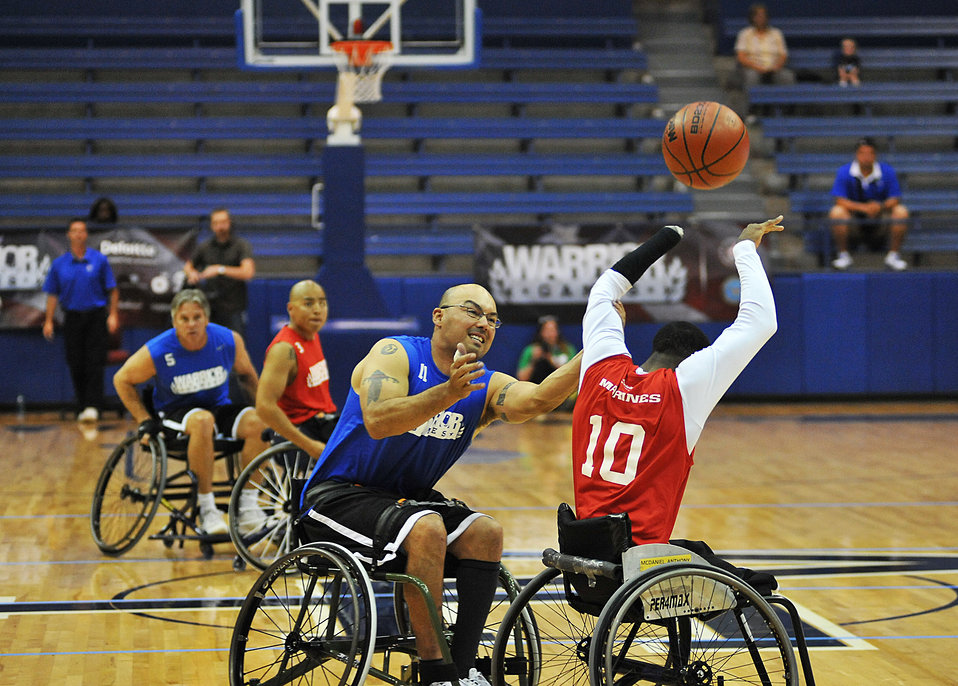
Warrior Games

Air Force team member Master Sgt. Christopher Aguilera (left) attempts to steal the ball from a member of the Marine Corps team during a basketball game May 4, 2012, during the Warrior Games at the U.S. Air Force Academy in Colorado Springs, Colo. The Air Force, which lost to the Marines won by a score of 37-21, won the bronze medal.